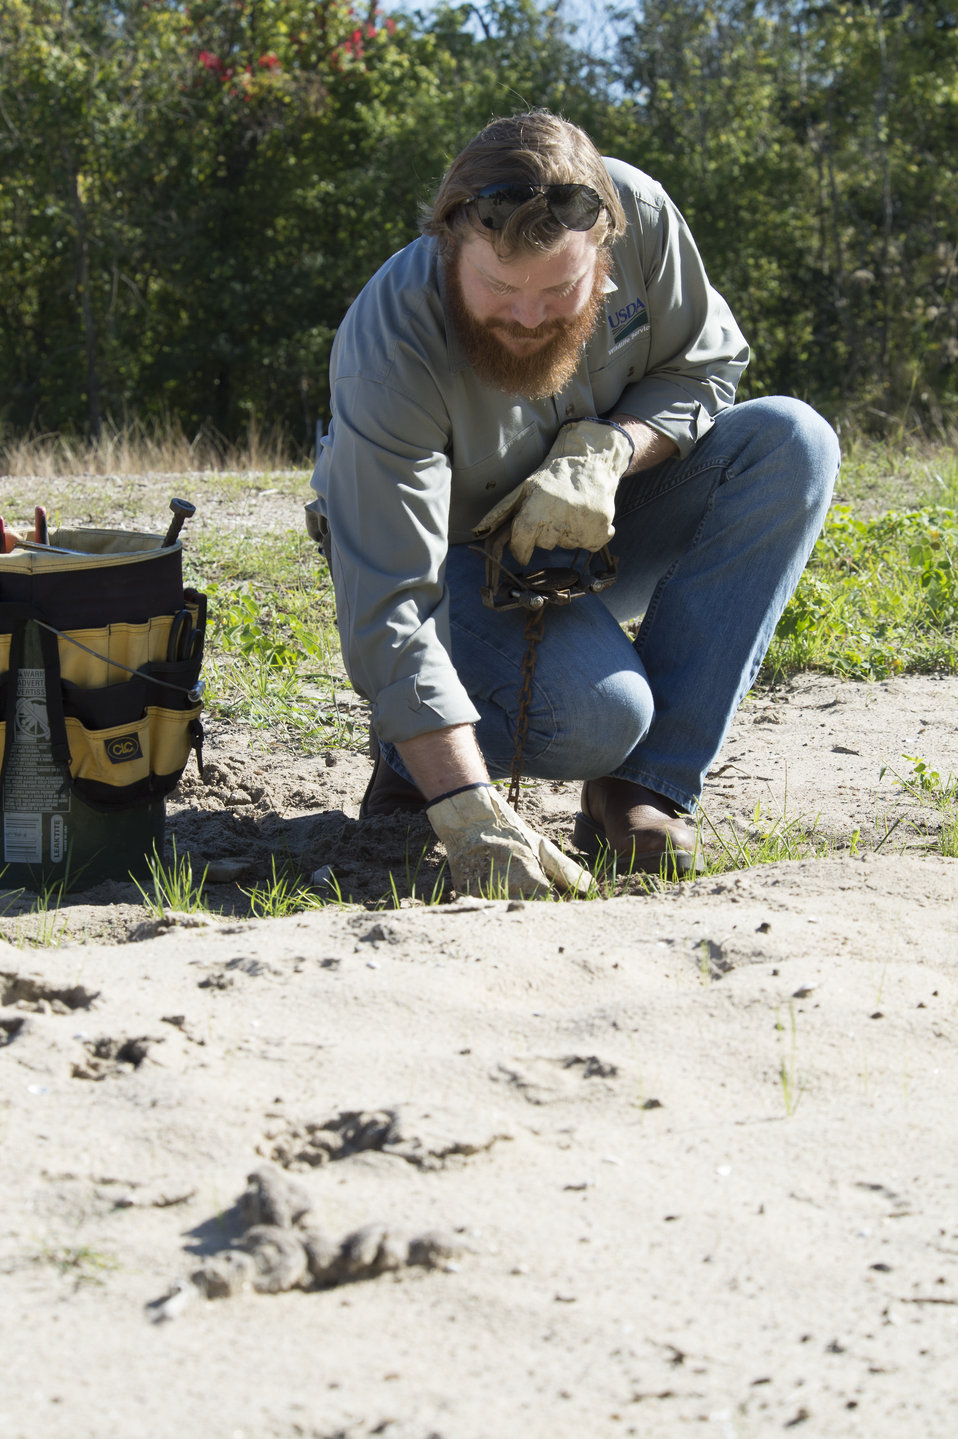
The U.S. Department of Agriculture’s (USDA) Animal and Plant Health Inspection Service (APHIS) Wildlife Services (WS) assists with the humane removal of animals from the Naval Air Station Joint Reserve Base in Belle Chase, LA on Wednesday, Nov. 20, 2013. Animals that wander onto the airstrip are dangerous to aircraft on take off and landing.